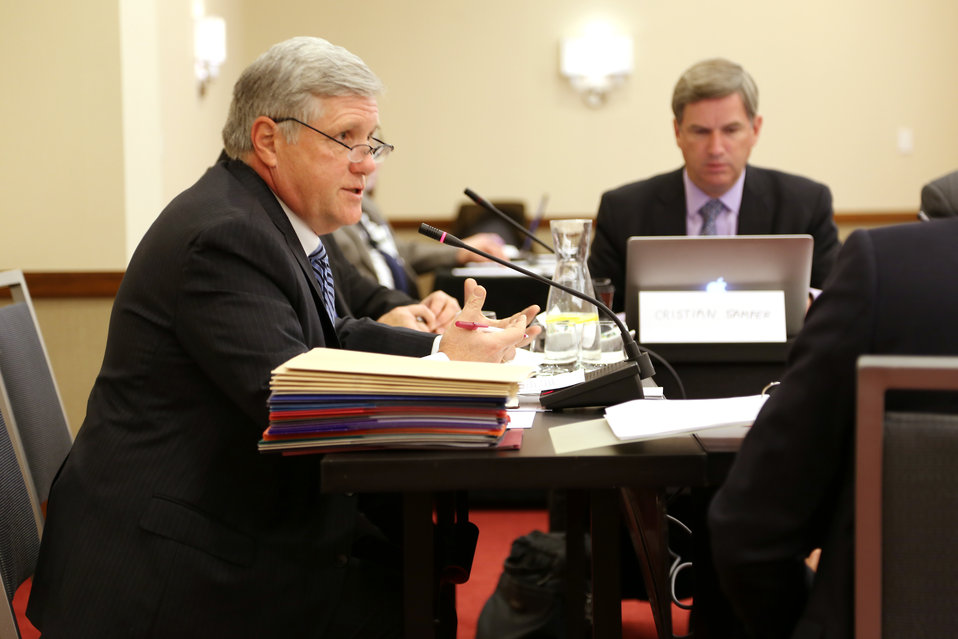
Wildlife Trafficking Advisory Council Meeting March 20, 2014